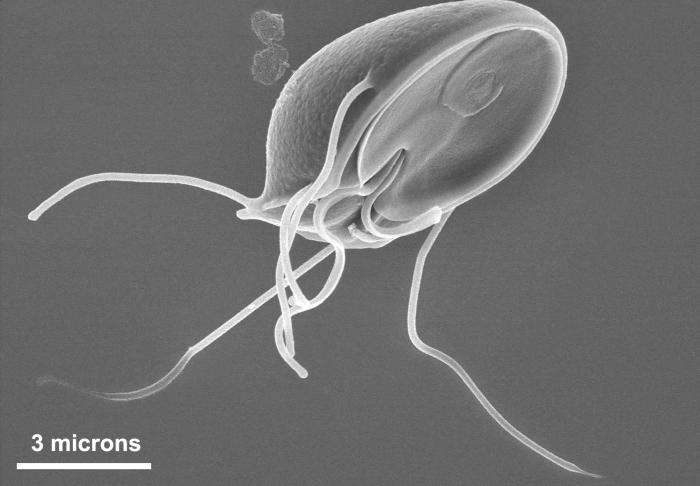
This scanning electron micrograph (SEM) clearly showed the ventral surface of a Giardia muris trophozoite. The ventral adhesive disk resembles a suction cup, where overlapping microtubules in the cytoplasm form a number-6-shaped figure. Giardia muris has four pairs of flagella that are responsible for the organism's motility. The adhesive disk facilitates adherence of the protozoan to the intestinal surface.